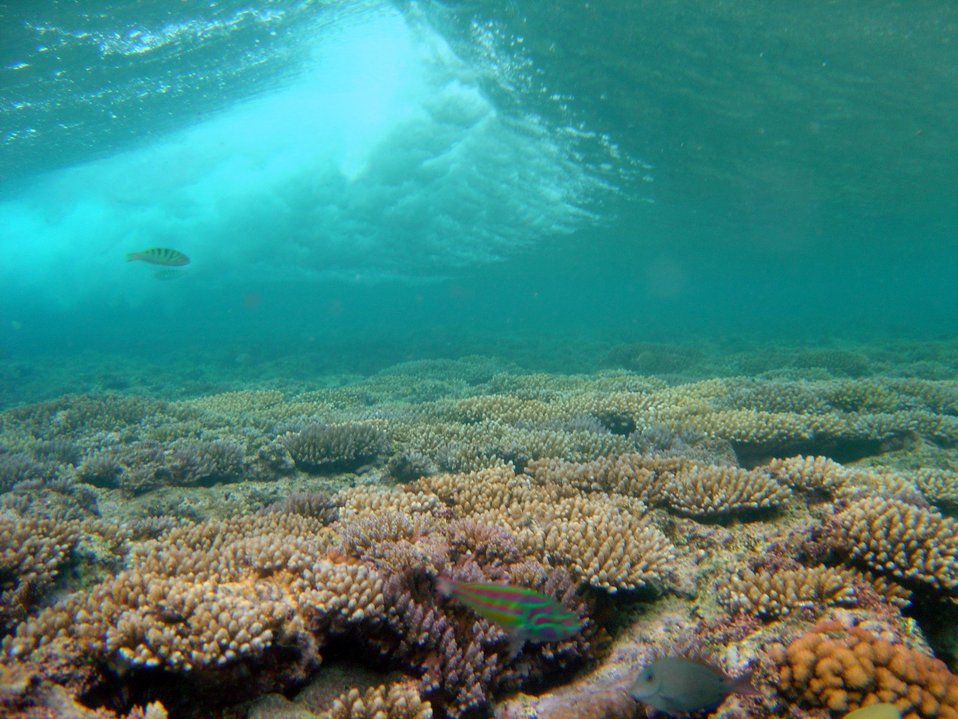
Fivestripe (Thalassoma quinquevittatum) wrasse in foreground with breaking wave over shallow reef